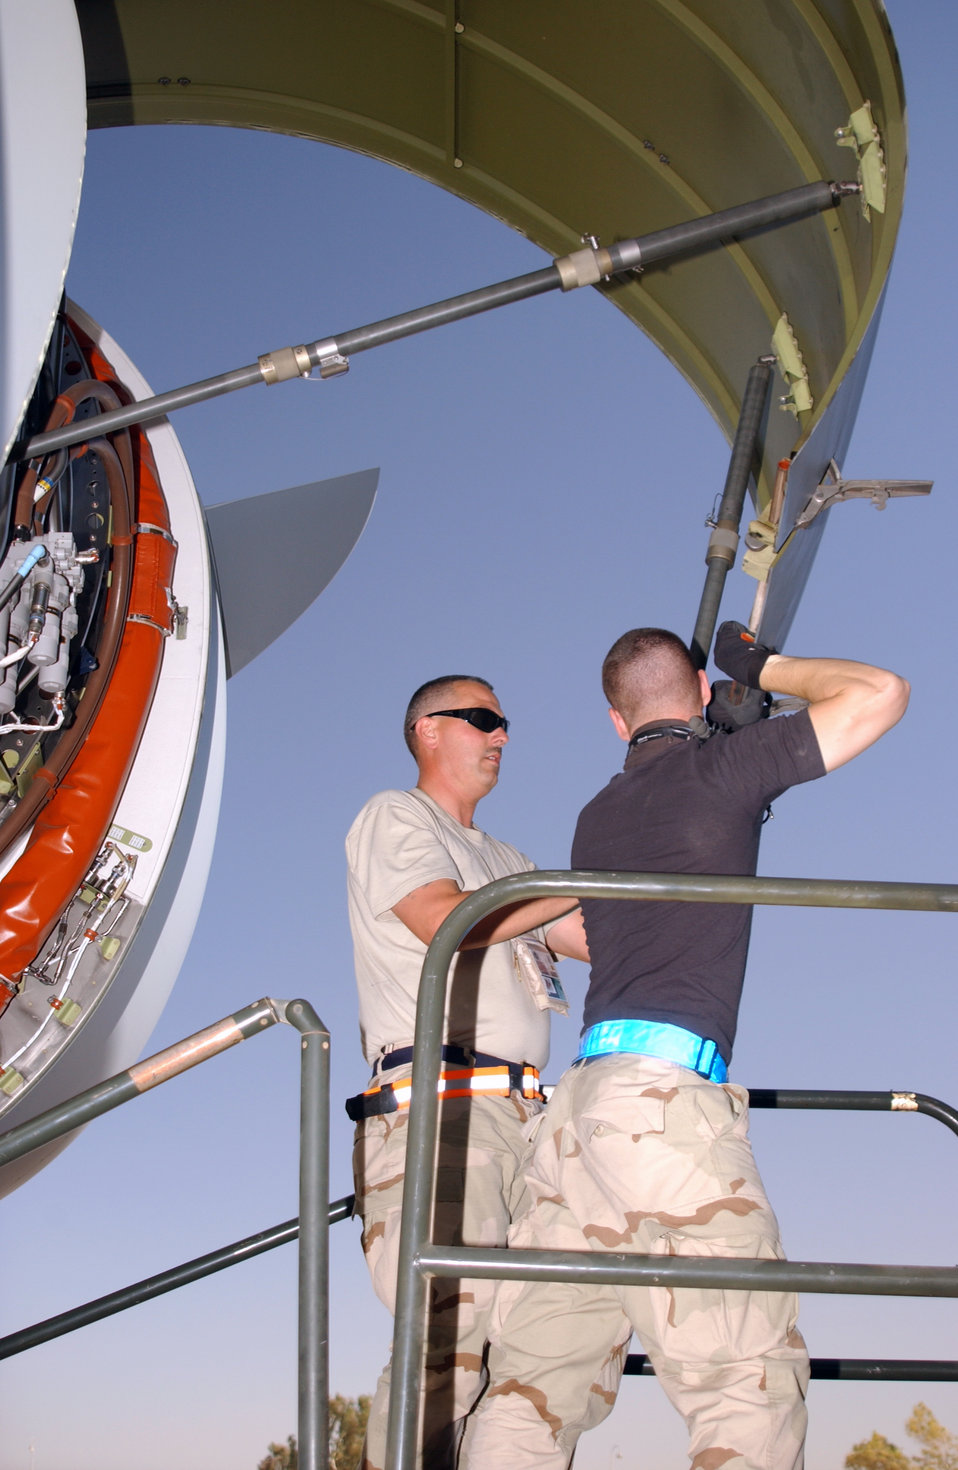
Balad's mission begins with strategic airlift

Staff Sgt. Robert Miller and Airman 1st Class Mark Mano open the engine cowling of a C-17 Globemaster III Sept. 18. The Airmen are assigned to the 721st Air Mobility Operations Group, Detachment 5, which is responsible for the recovering, marshaling and repair of the C-5 Galaxies and C-17s that land here.